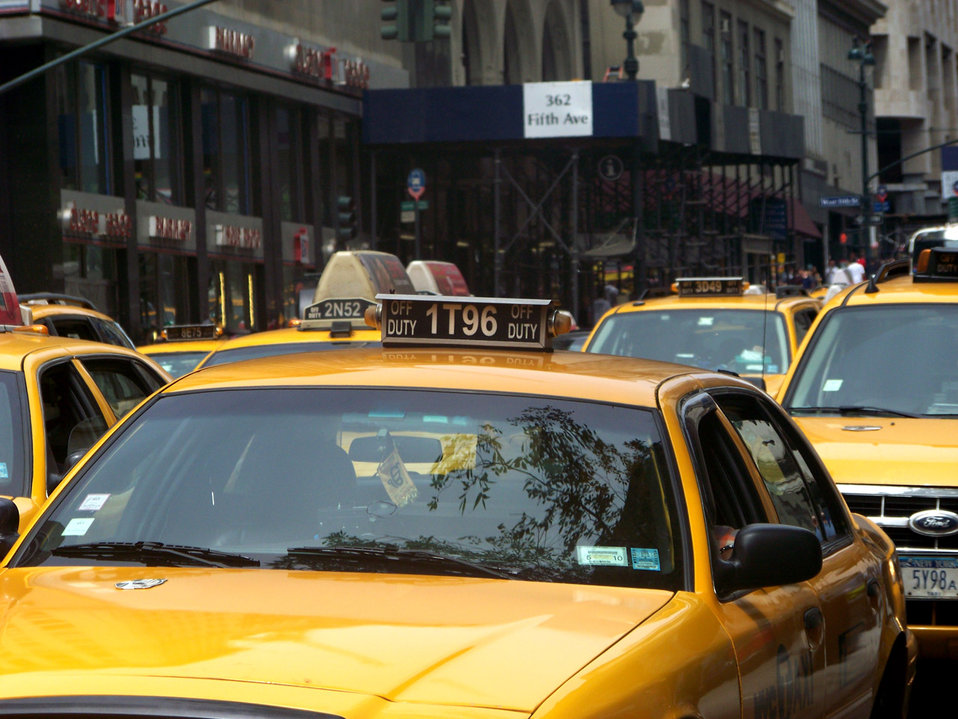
Taxicabs on 5th avenue

A row of taxicabs coming down 5th avenue in new york city..